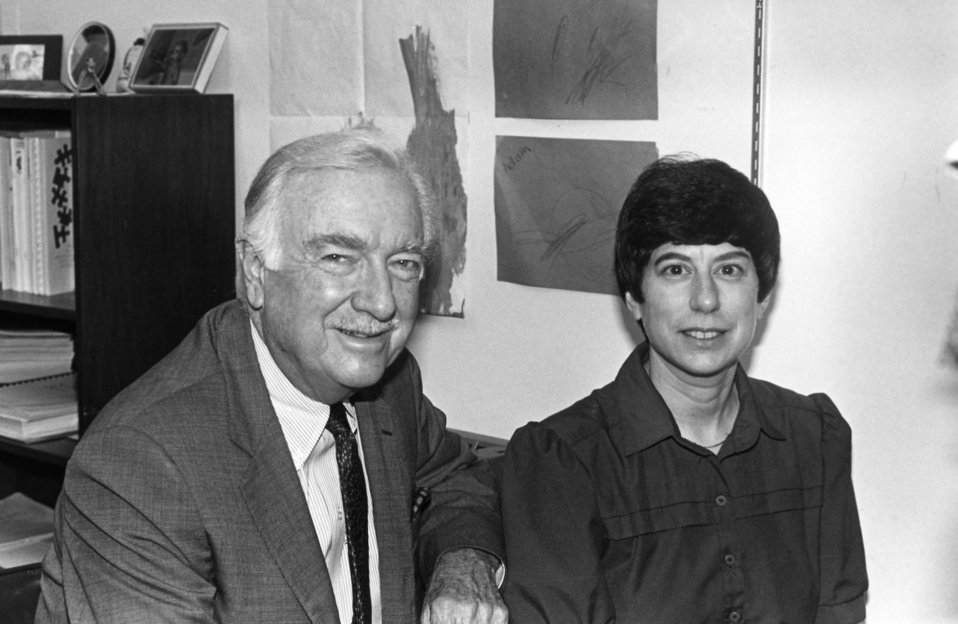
This 1986 photograph shows former newsman Walter Cronkite during a visit to the Centers for Disease Control seated next to CDC staff member Linda Saltman.